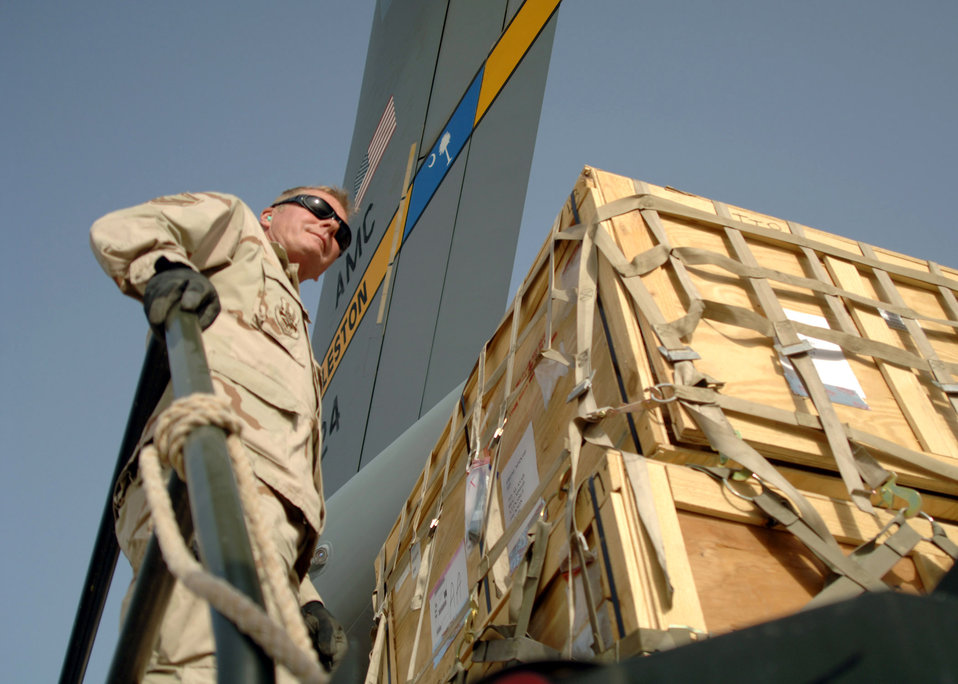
Aerial porters saving countless lives moving air cargo in Iraq

Senior Master Sgt. Tom Luke coordinates the offload of a C-17 Globemaster III from Charleston Air Force Base, S.C., April 21 at at Al Asad Air Base, Iraq. Since January, Airmen assigned to the 438th Aerial Port Flight have processed more than 32,000 passengers, 15,528 tons of cargo and more than 2,600 aircraft keeping nearly 12,000 American servicemembers off the roads in convoys. Sergeant Luke is a day shift supervisor with the 438th APF.